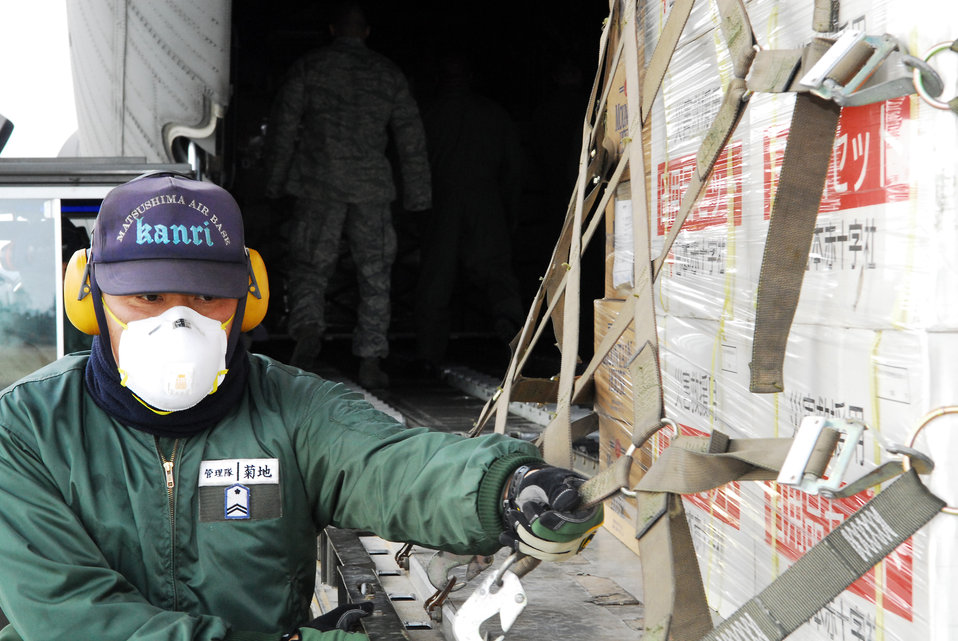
Delivering relief supplies

A Japanese service member off-loads relief supply pallets from a C-130 Hercules March 29, 2011, at Matsushima Air Base, Japan.